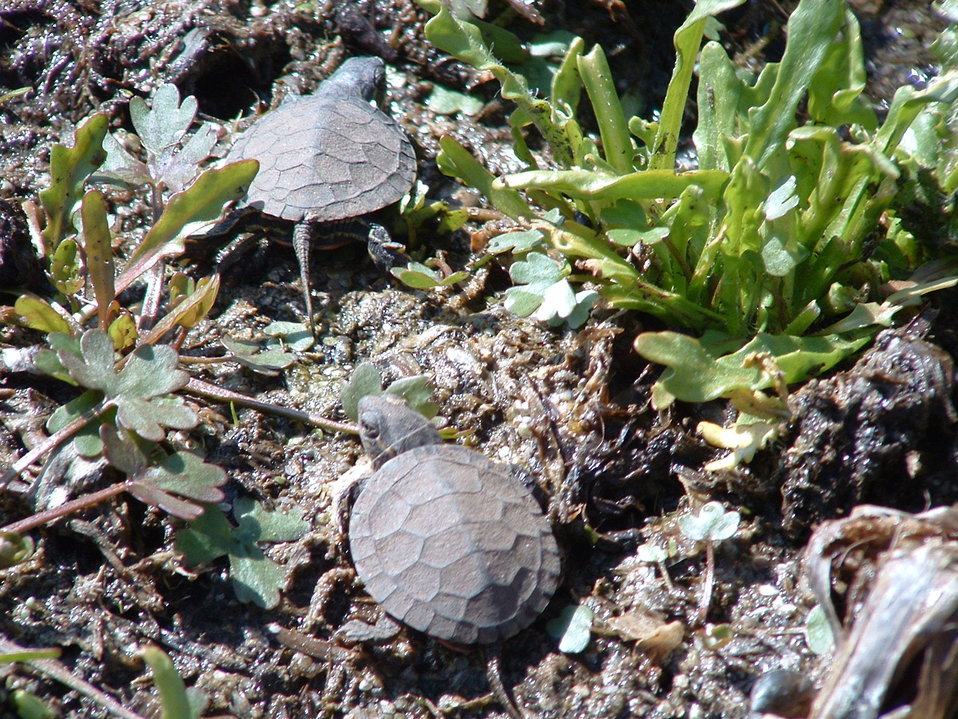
Tiny Travelers

Recently-hatched painted turtles make their way to the nearest pond at Waubay National Wildlife Refuge.